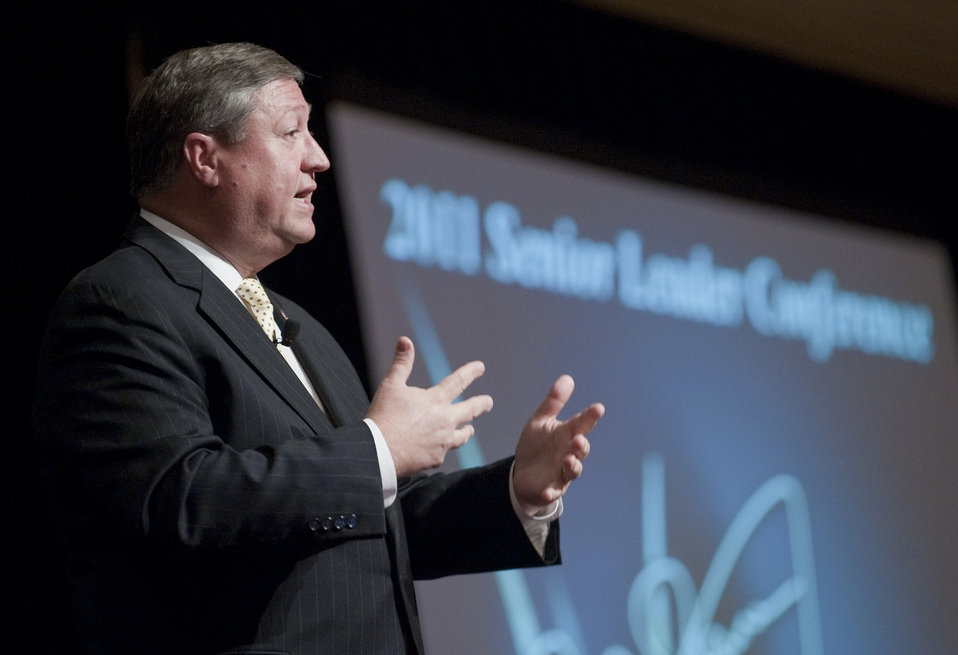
Air Force Reserve Command Senior Leader Conference

Secretary of the Air Force Michael Donley addresses Air Force Reserve Command senior leaders May 16, 2011, during their annual conference in Washington, D.C.